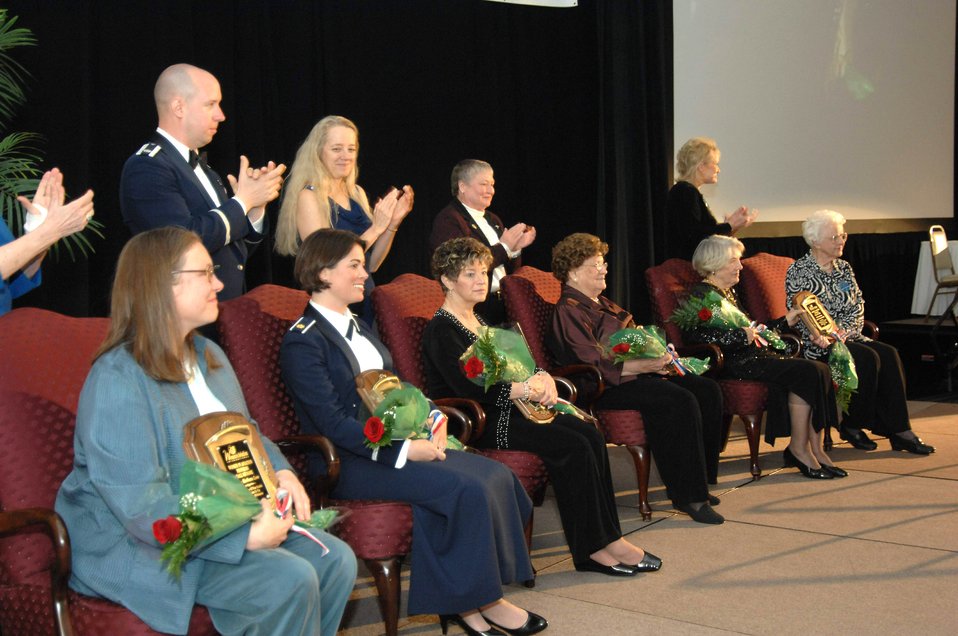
Pilot inducted into women's aviation hall of fame

Maj. Nicole Malachowski sits with other female aviators who were being inducted into the Women in Aviation International's Pioneer Hall of Fame March 15 at the Town and Country Convention Center in San Diego. The major, who piloted the Thunderbirds right wing No. 3, was recognized for being the first female pilot to be part of a U.S. military flight demonstration team.